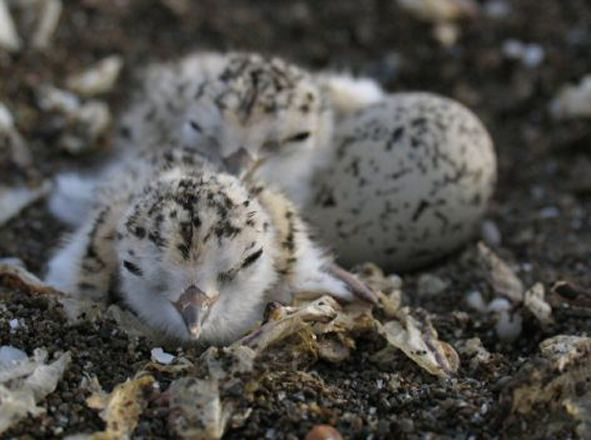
Western snowy plovers and egg

The western snowy plover is a small shorebird, about 6 inches long, with a thin dark bill, pale brown to gray upper parts, white or buff colored belly, and darker patches on its shoulders and head, white forehead and supercilium (eyebrow line). Snowy plovers also have black patches above their white forehead and behind the eye. Juvenile and basic (winter) plumages are similar to adult, but the black patches are absent. Some breeding males, especially in the southern portion of the species’ range, may exhibit a rusty or tawny cap. Their dark gray to black legs are a useful characteristic when comparing them to other plover species.

The Pacific Coast population of the western snowy plover is federally threatened under the Endangered Species Act of 1973. It is also a Bird Species of Special Concern in California. Snowy plovers were listed as endangered under Washington Department of Game Policy No. 402 in 1981, and as threatened by the Oregon Fish and Wildlife Commission in 1975. The threatened status in Oregon was reaffirmed in 1989 under the Oregon Endangered Species Act.
Ron LeValley/LeValley Photographs/USFWS